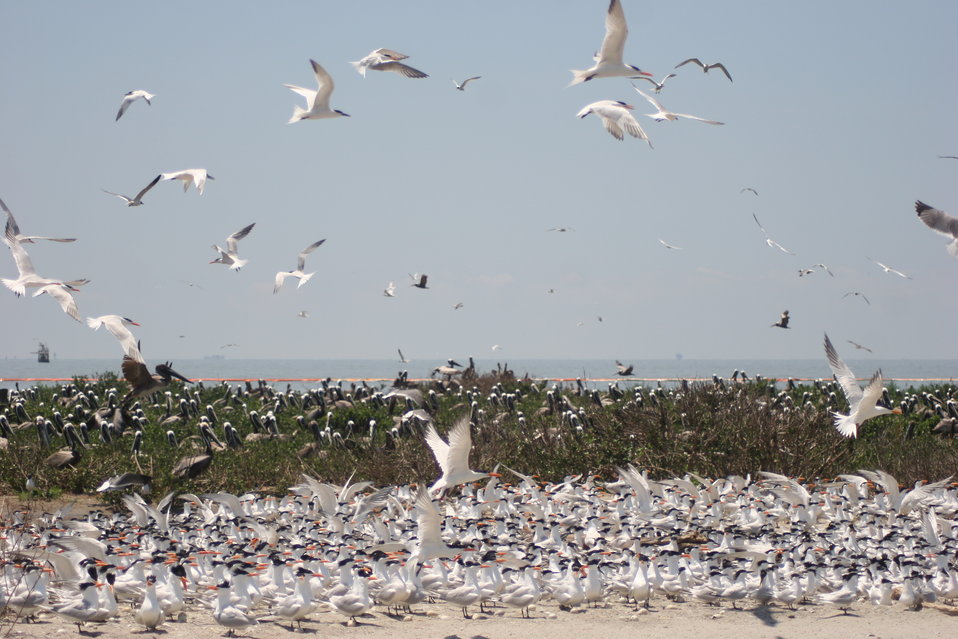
Birds on Breton National Wildlife Refuge

Royal terns and Brown pelicans nest on Breton National Wildlife Refuge. Booms can be seen in the background.